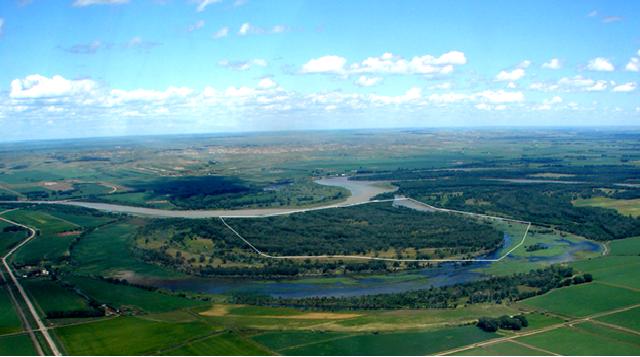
Aerial View of Maurer/Taylor Tract

The Maurer/Taylor tract, located at the confluence of the Yellowstone and Missouri Rivers in northwestern North Dakota, is a 495 acre parcel featuring a mature cottonwood gallery forest, 106 acres of connected backwater wetlands, and one mile of Missouri River.